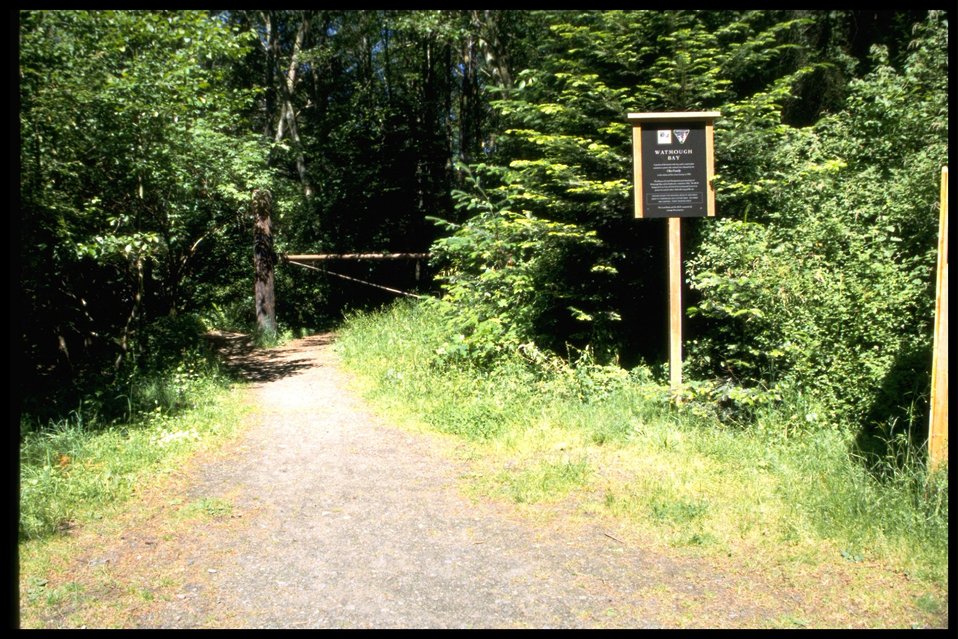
Trailhead at Watmough Bay parking lot.